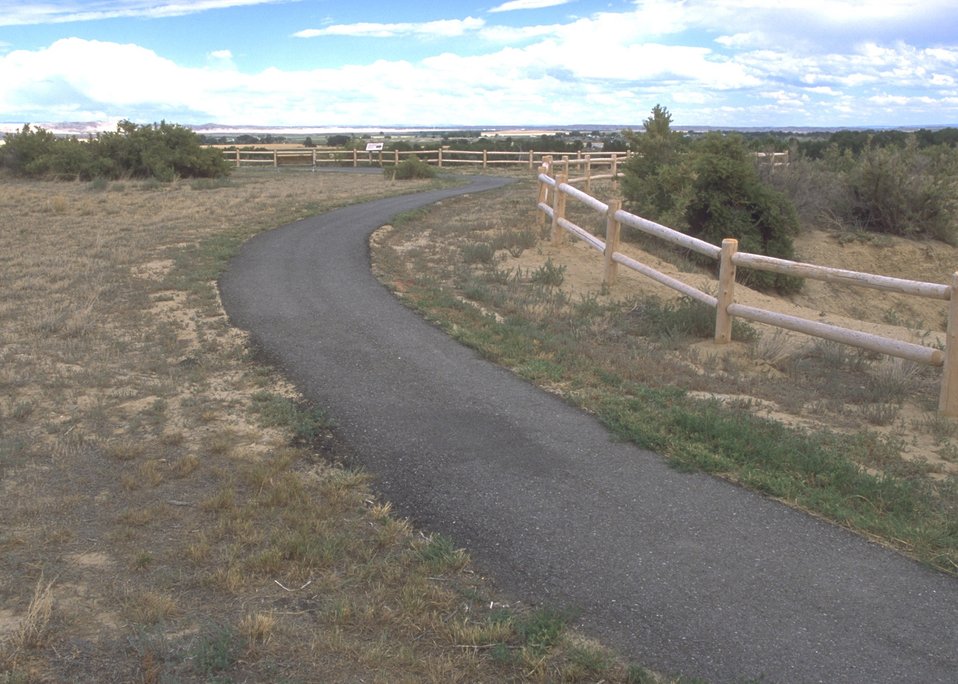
Duck Swamp Interpretive Area, Worland Field Office.